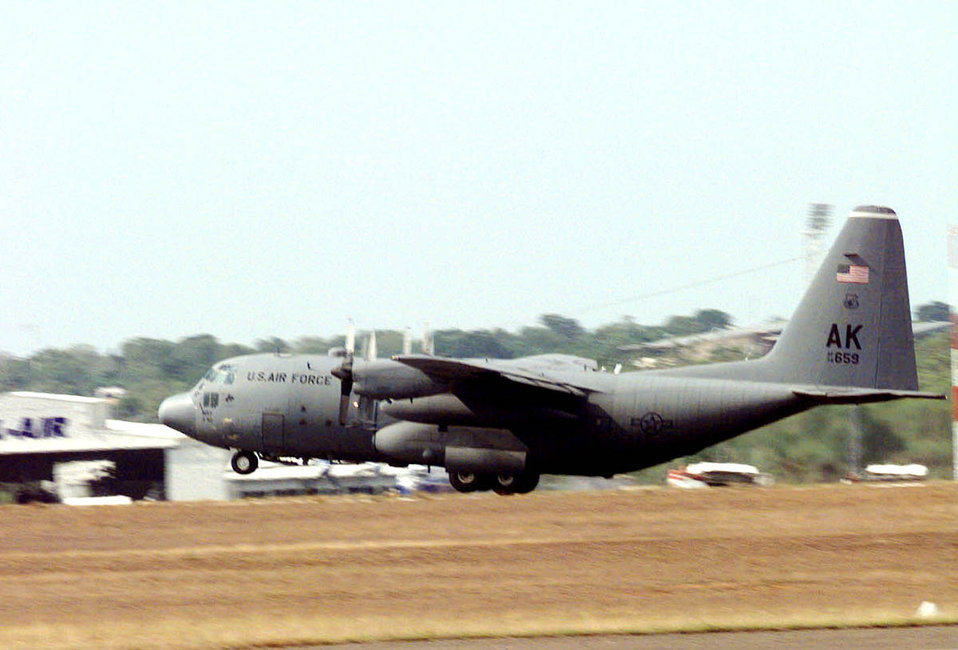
Firebirds down under

DARWIN ROYAL AUSTRALIAN AIR FORCE BASE, Australia -- A C-130 Hercules from the 517th Airlift Squadron, Elmendorf Air Force Base, Alaska, takes off bound for East Timor to deliver cargo and equipment during Operation Stabilise.